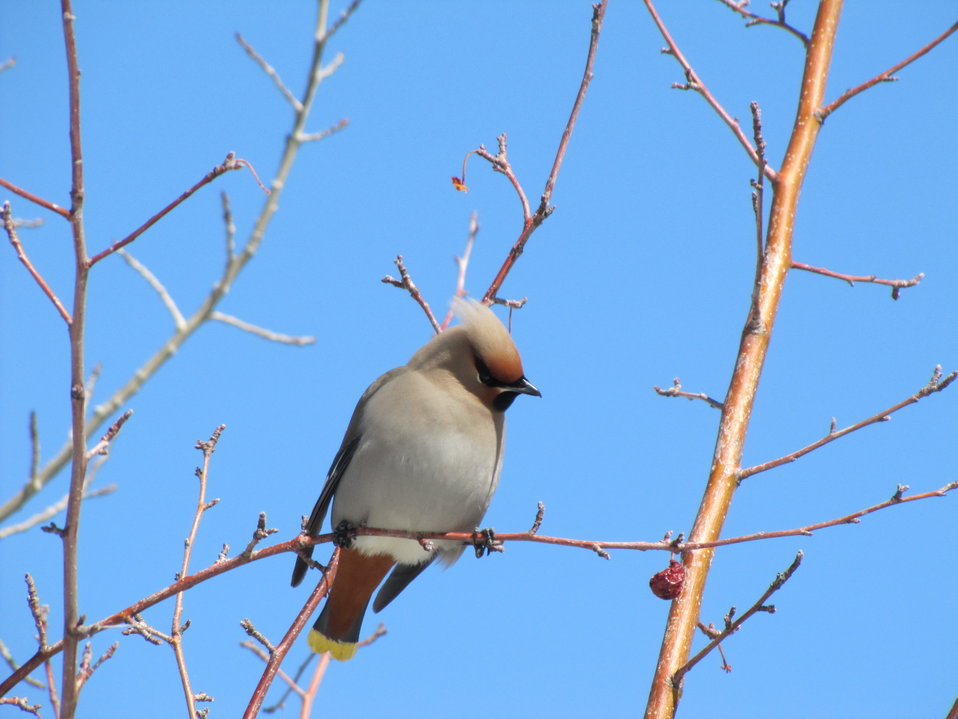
Contemplating a Morsel

A Bohemian Waxwing eyes a piece of fruit from a tree outside the National Elk Refuge administrative offices.